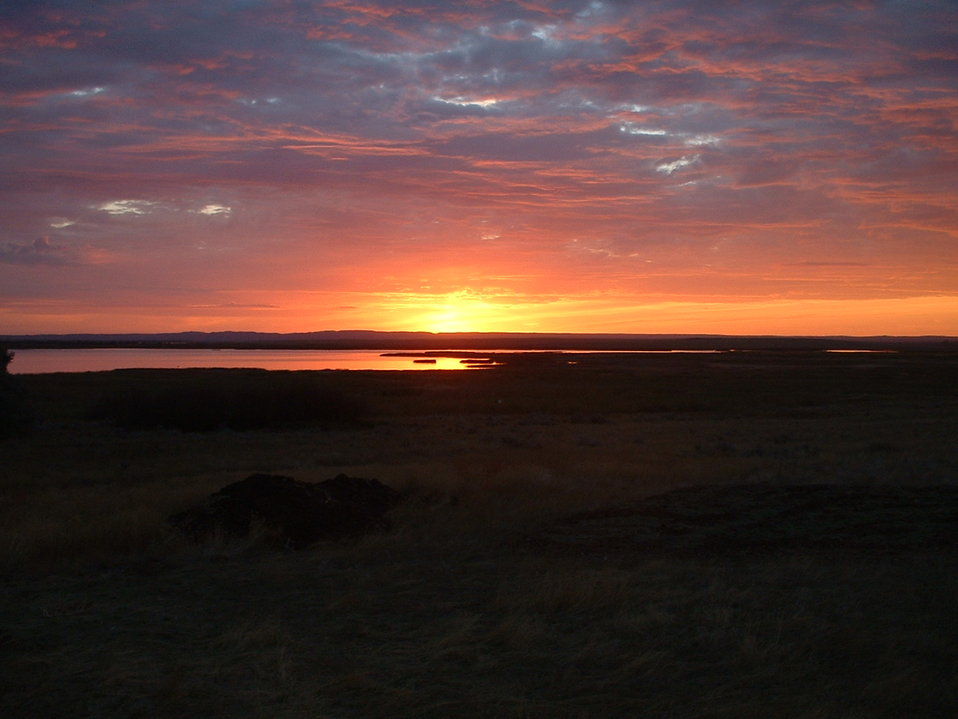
Sunrise on Bowdoin NWR